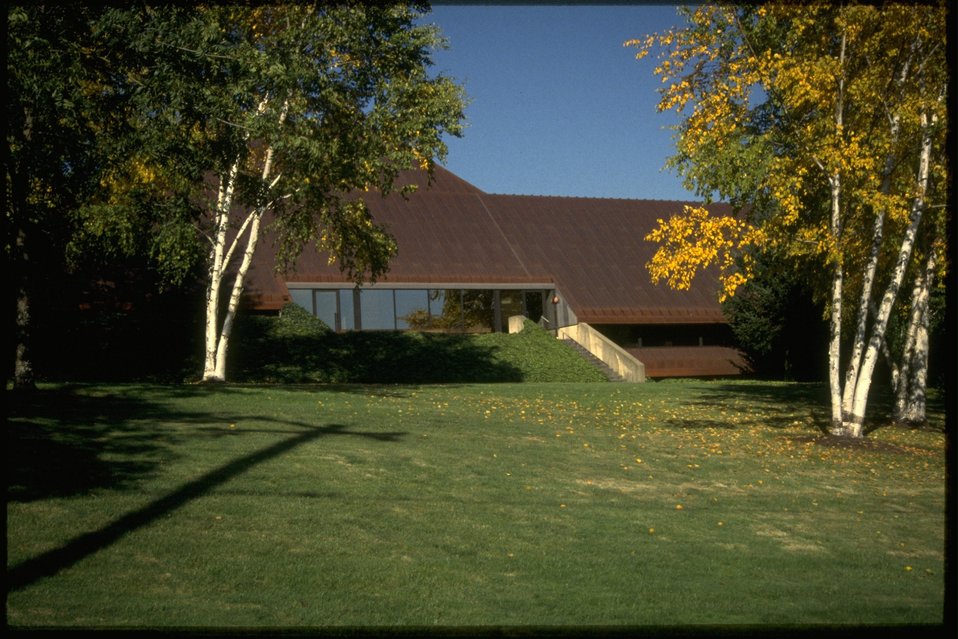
BLM office in Salem, OR.